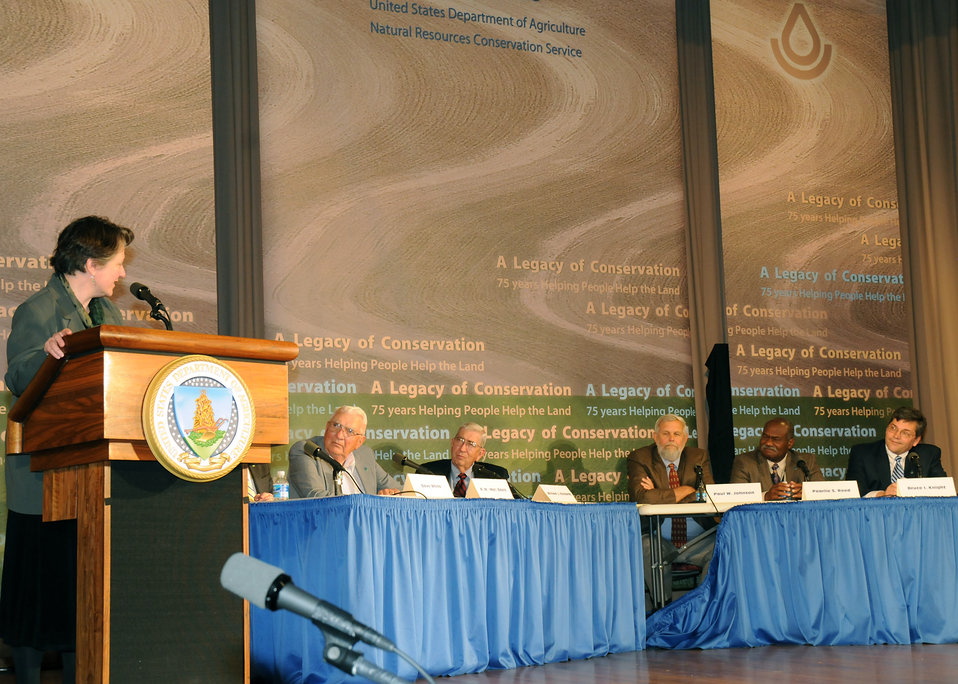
Agriculture Deputy Secretary Kathleen Merrigan speaks at the Natural Resource Conservation Service (NRCS) 75th Anniversary celebration “ Legacy of Conservation”. Seated L to R Dave White current Chief NRCS, and former Chiefs R. M. (Mel) Davis June 1975 - June 1979, William R. Richards, Dec. 1990 - Jan. 1993, Paul Johnson Jan. 1994 - Nov. 1997, Pearlie S. Reed, March 1998 - May 2002, and Bruce Knight, May 2002 - Aug. 2006. The event took place at the Jefferson Auditorium, U. S. Department of Agriculture in Washington, D. C., on Tuesday April 27, 2010. USDA photo 10di1330-88